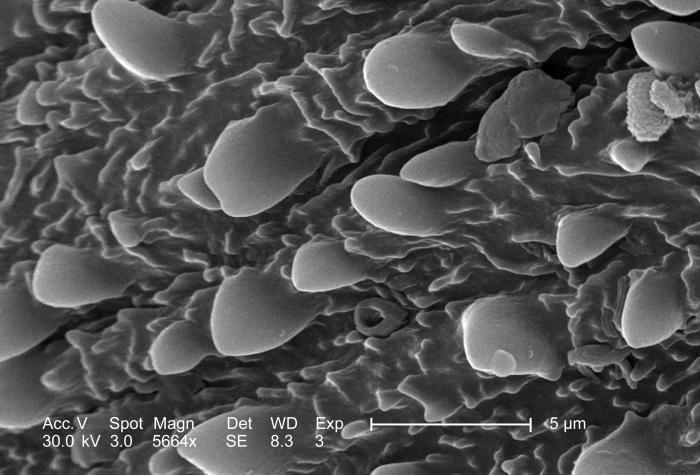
This scanning electron micrograph (SEM), highly magnified at 5664x, revealed the ornamentally adorned exoskeletal surface of an unidentified insect. The exoskeletal section was from the region occupying its inferior abdomen. Overall, the insect was described as being black, and its black wings were patterned with longitudinally oriented red stripes. It measured approximately .25 inches, and was found deceased on the ground of the Decatur, Georgia suburbs.